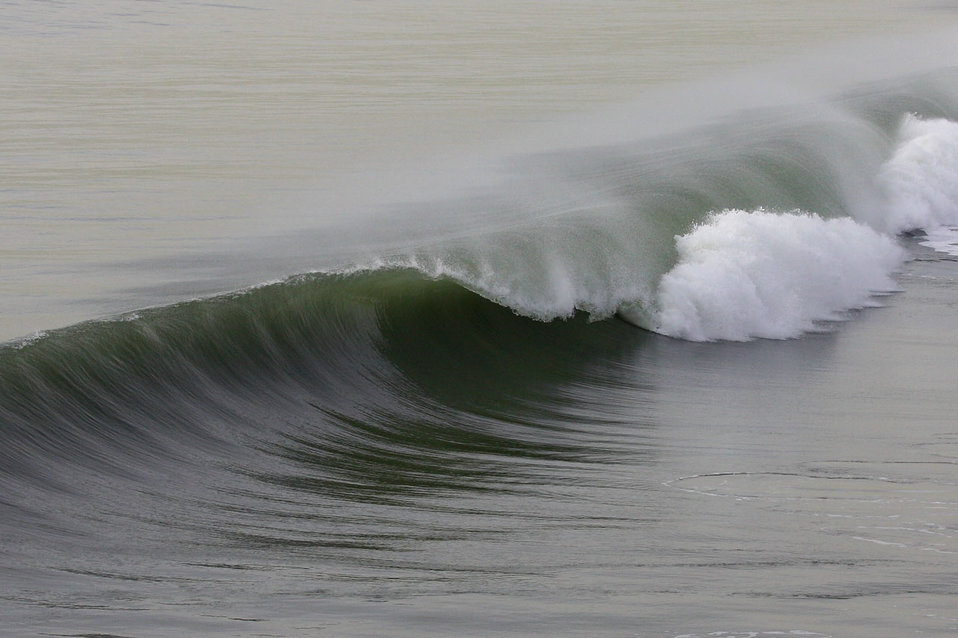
Breaking wave with a nice curl and wind spray, probably 4-5 feet high, on the north side of huntington beach pier.